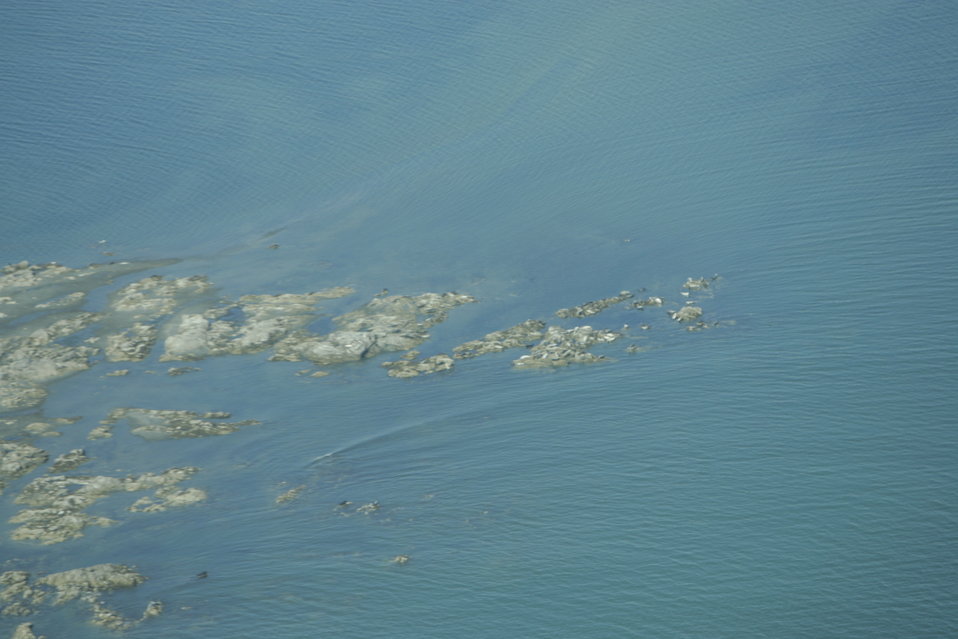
Togiak Nation Wildlife Refuge